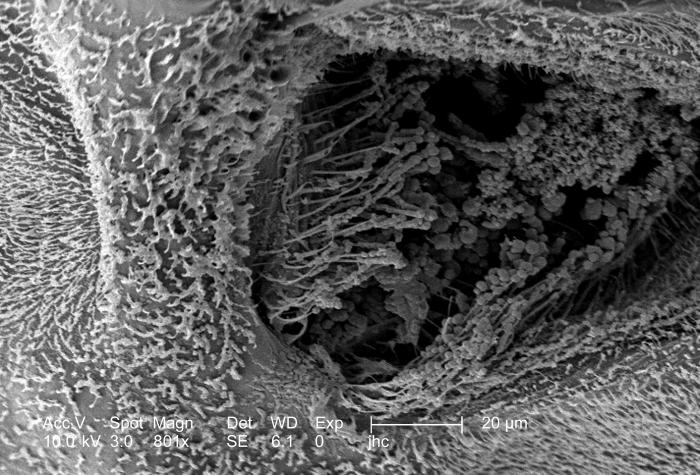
At a moderately high magnification of 801x, this scanning electron micrograph (SEM) revealed some of the morphologic features displayed on the exoskeletal surface of an Anopheles gambiae mosquito. In the field of view was the left "mesothoracic spiracle", which is a cavernous depression in the exterior thoracic surface through which the mosquito's breathing occurs. Note the multitude of sensorial hairs, know as "setae", which cover the surface, and the pit's interior. The globular material seeming to coat the setae represents particulate matter picked up by the mosquito from its environment.